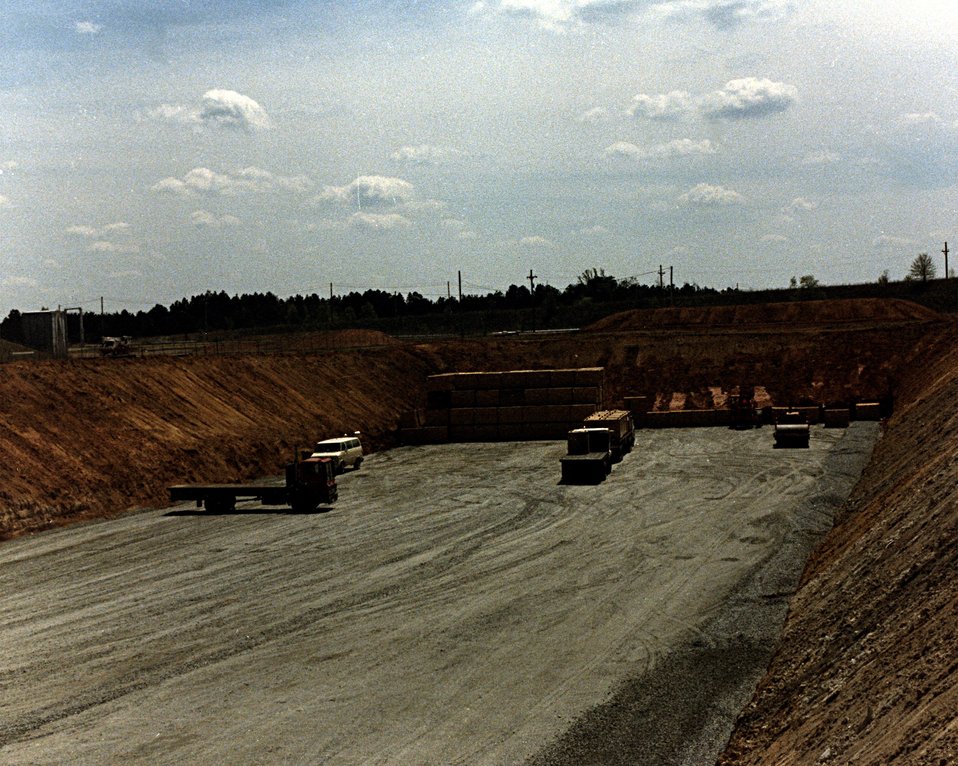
OVERALL VIEW OF THE LOW-LEVEL WASTE DISPOSAL TRENCH AT THE SAVANNAH RIVER SITE.

THIS PHOTOGRAPH SHOWS THE DISPOSAL PROCEDURE FOR LOW-LEVEL RADIOACTIVE WASTE AT THE SAVANNAH RIVER SITE. METAL BOXES CONTAINING THE WASTE ARE STACKED IN AN ENGINEERED TRENCH. WHEN ALL AVAILABLE SPACE IS USED, EARTH AND A PROTECTIVE COVERING FOR EROSION CONTROL WILL BE PLACED ON TOP OF THE WASTE CONTAINERS.